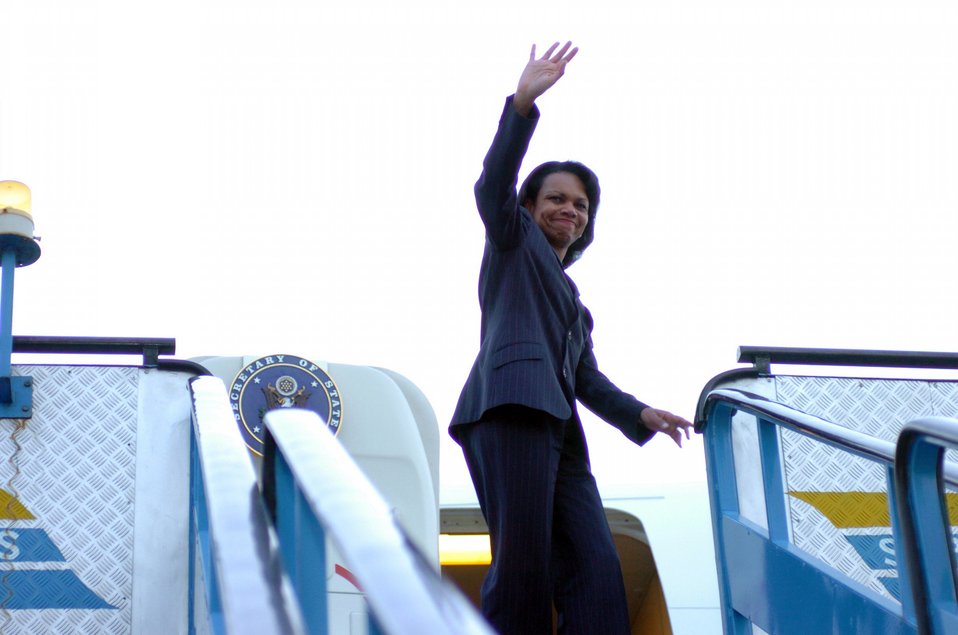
Operation Enduring Freedom

CHAKLALA, Pakistan -- U.S. Secretary of State Condaleeza Rice waves following a visit to the Pakistani air force base here Oct. 12. The Department of Defense is participating in the multinational effort to provide humanitarian assistance and support to Pakistan and parts of India and Afghanistan following a devastating earthquake.